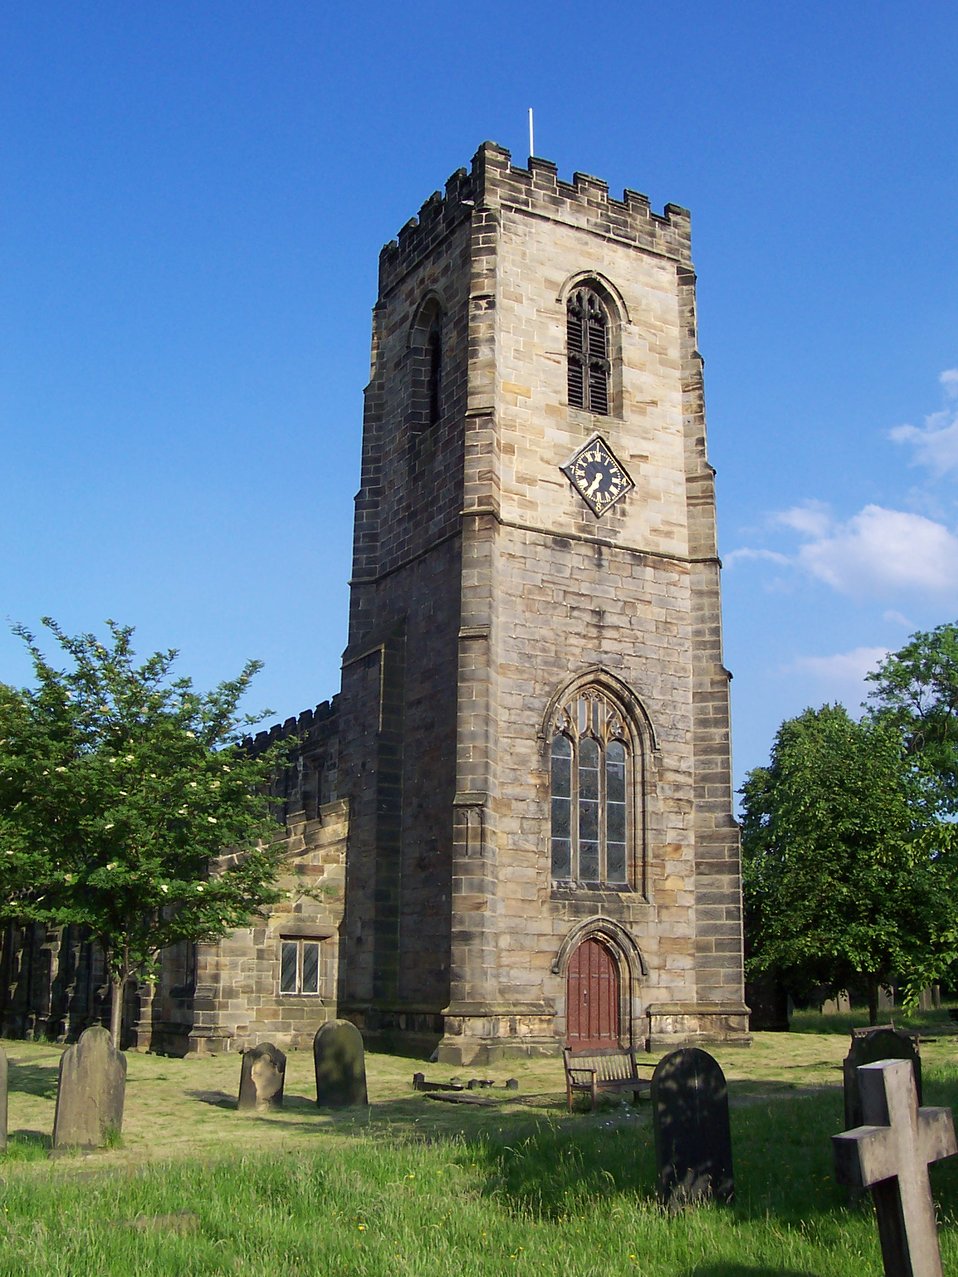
Photograph of Darton Church in the village of Darton taken by myself on 18 June 2005.